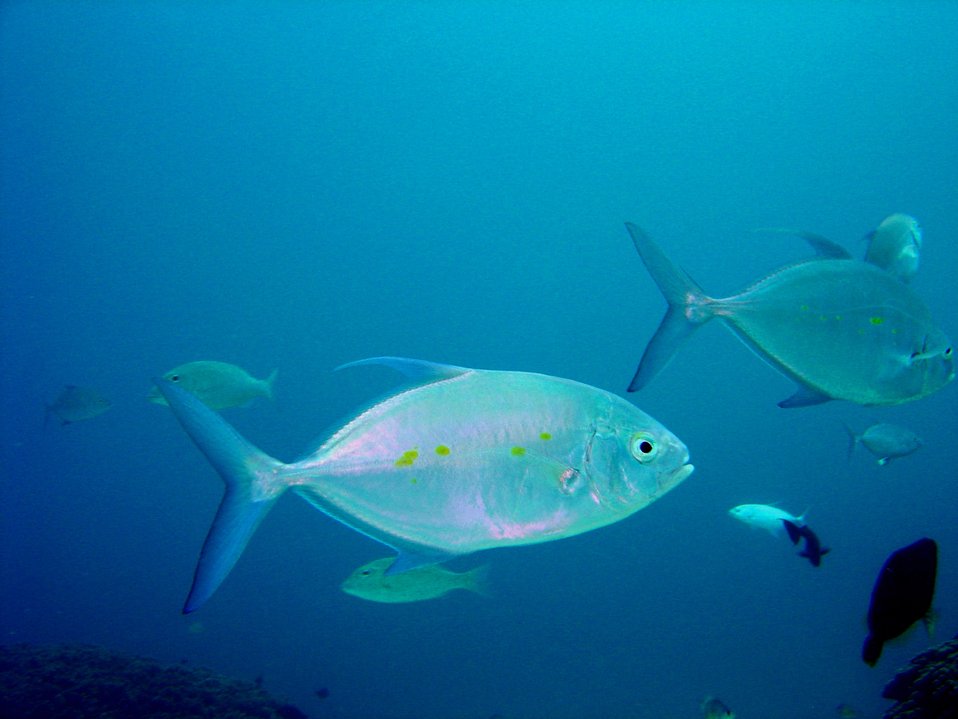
Yellow-spotted trevally (Carangoides orthogrammus).